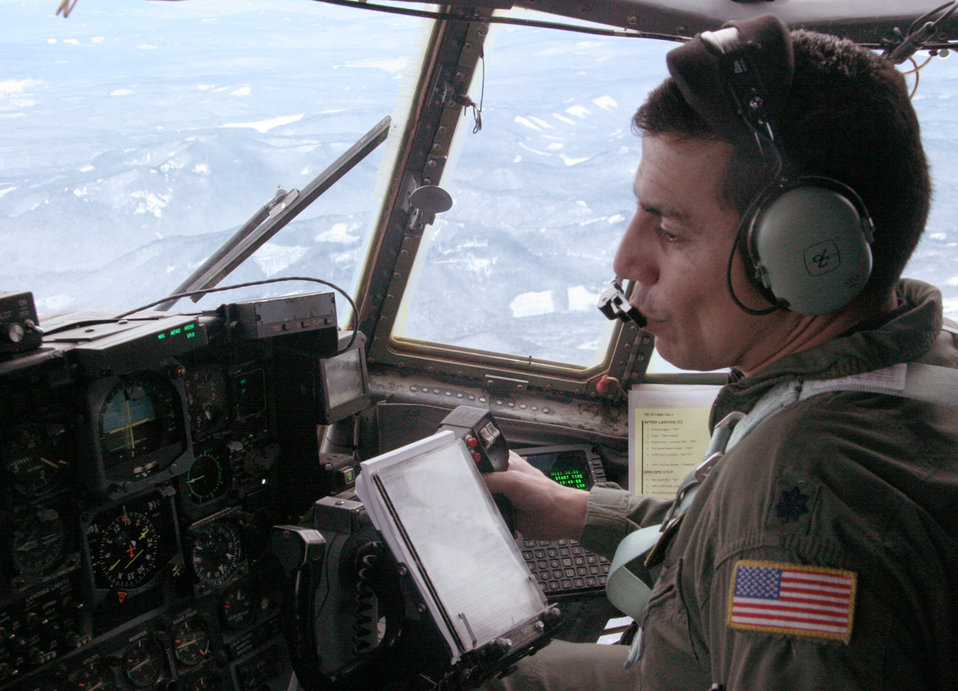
Military aircrews support Mount Hood rescue effort

Lt. Col. Caesar Garduno receives coordinates while flying a C-130 Hercules Dec. 16 over Mount Hood in Oregon. Colonel Garduno and his Air National Guard crew were joined by an Air Force Reserve pararescue jumpers seacrhing for three missing climbers. Colonel Garduno is a C-130 pilot from the 152nd Airlift Wing in Nevada.